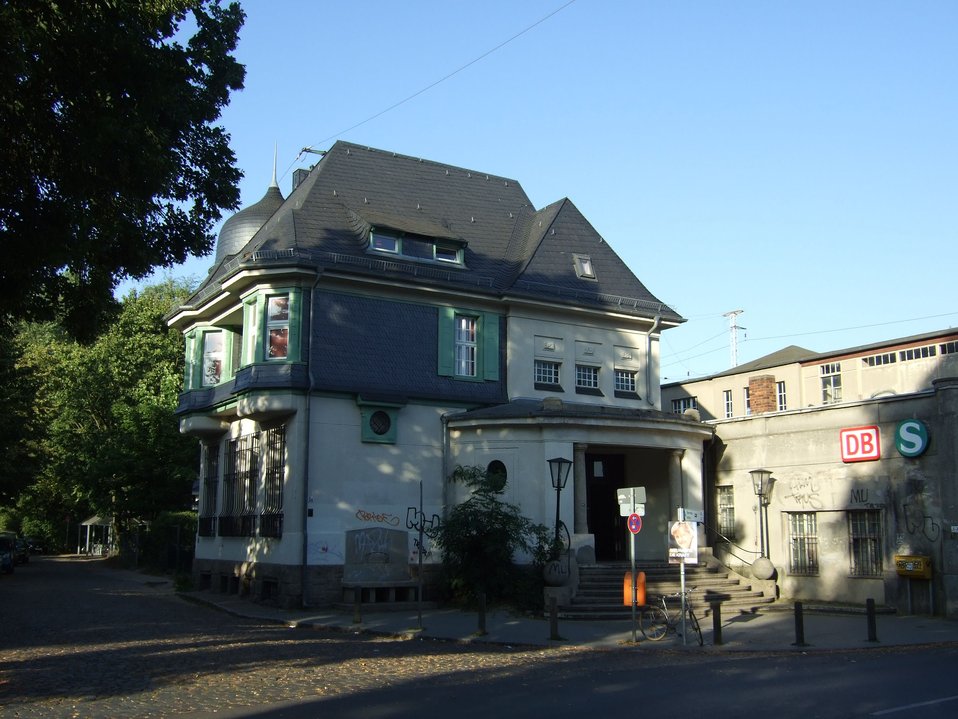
Train station Berlin Karow Deutsch: Bahnhof Berlin-Karow